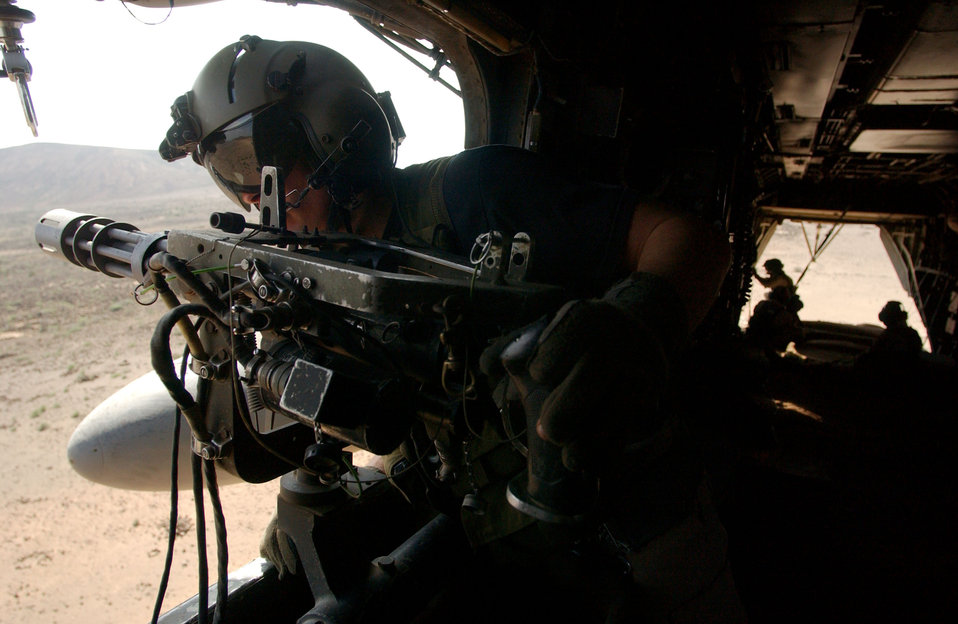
Dust in the wind

OPERATION ENDURIING FREEDOM (AFPN) -- An MH-53M Pave Low flight engineer from the Air Force Special Operations Detachment at Camp Lemonier in Djibouti, Africa, keeps an eye on the ground as the aircraft performs